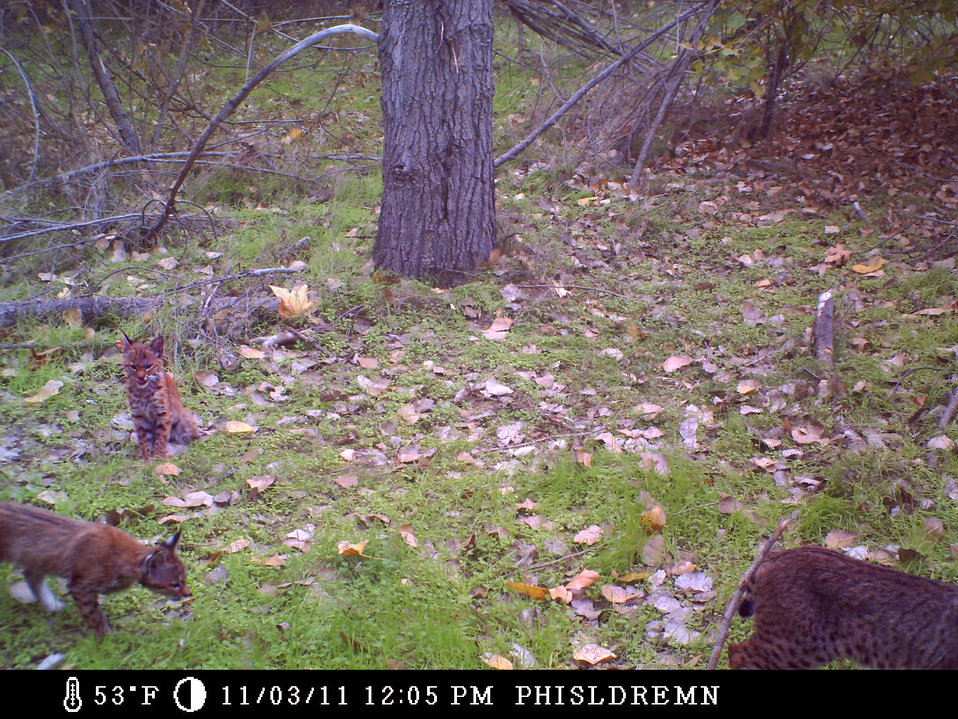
Where she goes, I go...

trail camera photo
Sacramento River National Wildlife Refuge, CA